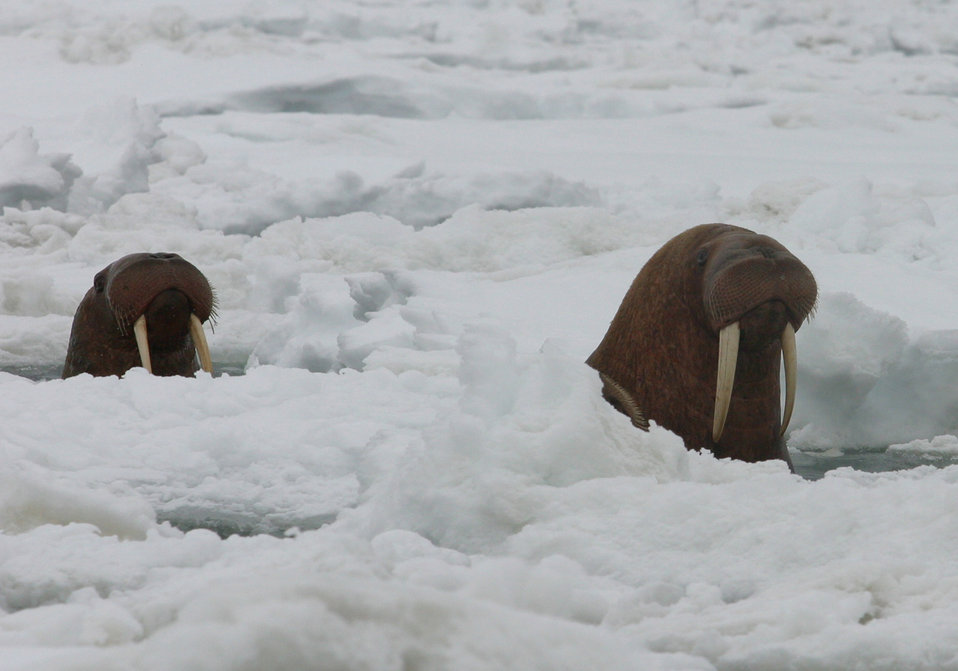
Pacific Walrus surfacing through ice on the Alaska coast.